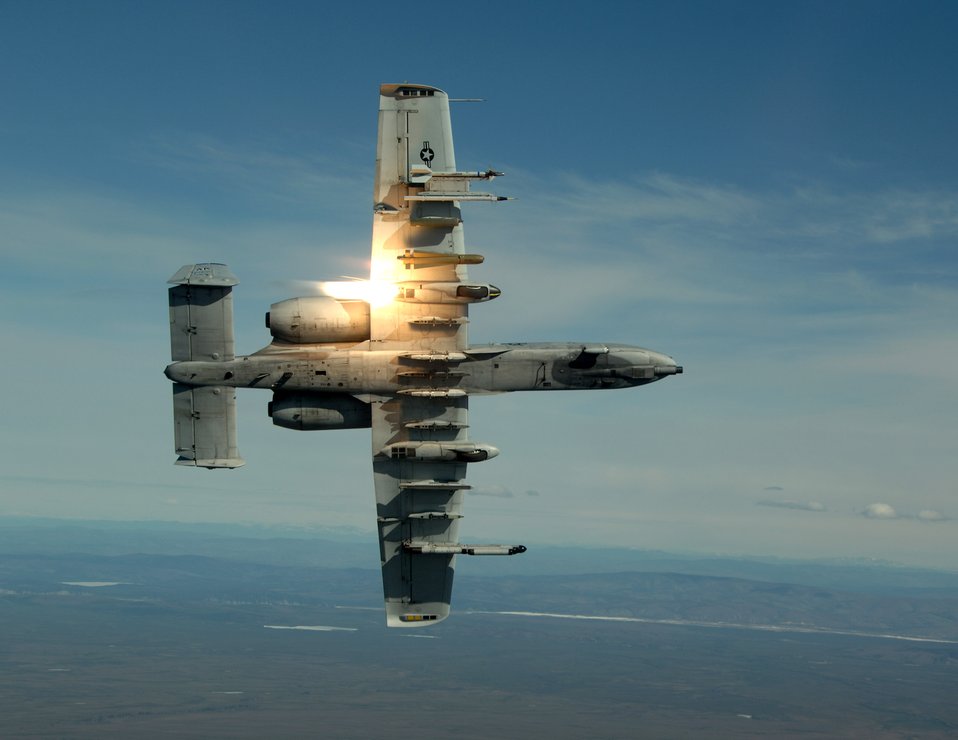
Airpower summary for Sept. 18, 2007

The highly maneuverable A-10 Thunderbolt II, like this one, can employ massive firepower to protect coalition troops on the ground supporting Operation enduring Freedom.